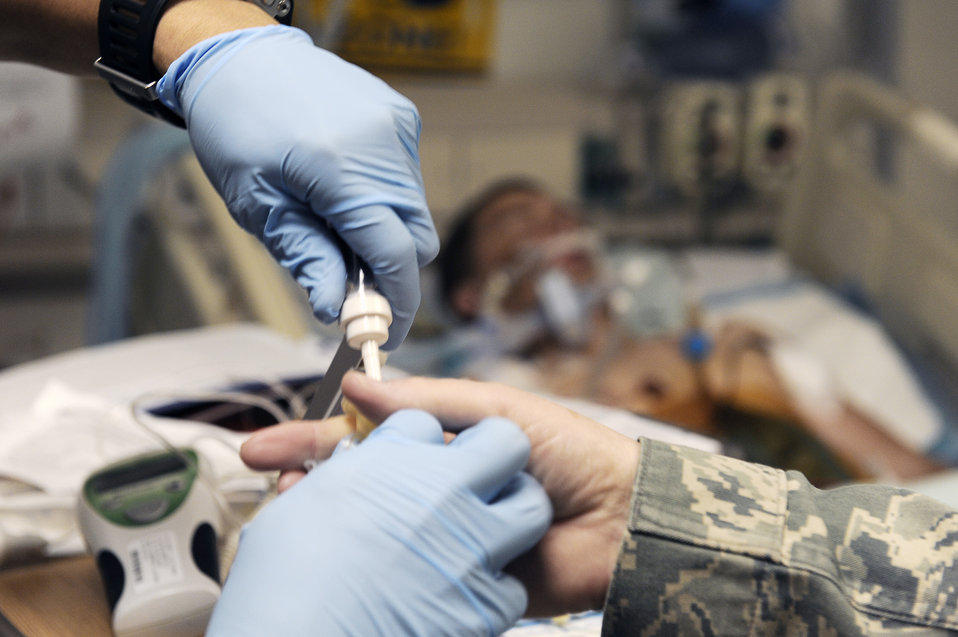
Medical team in Southwest Asia

Airmen prepare an IV in the intensive care unit May 5, 2010, at the Craig Joint Theater Hospital at Bagram Airfield, Afghanistan. Airmen are from the 455th Expeditionary Medical Group/Task Force Medical East.